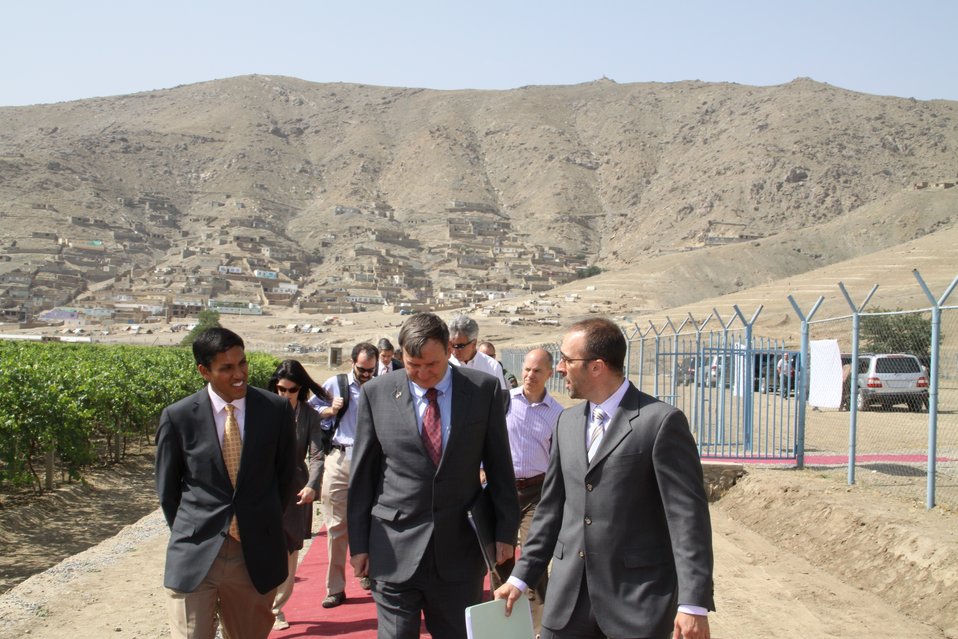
Badam Bagh Farm